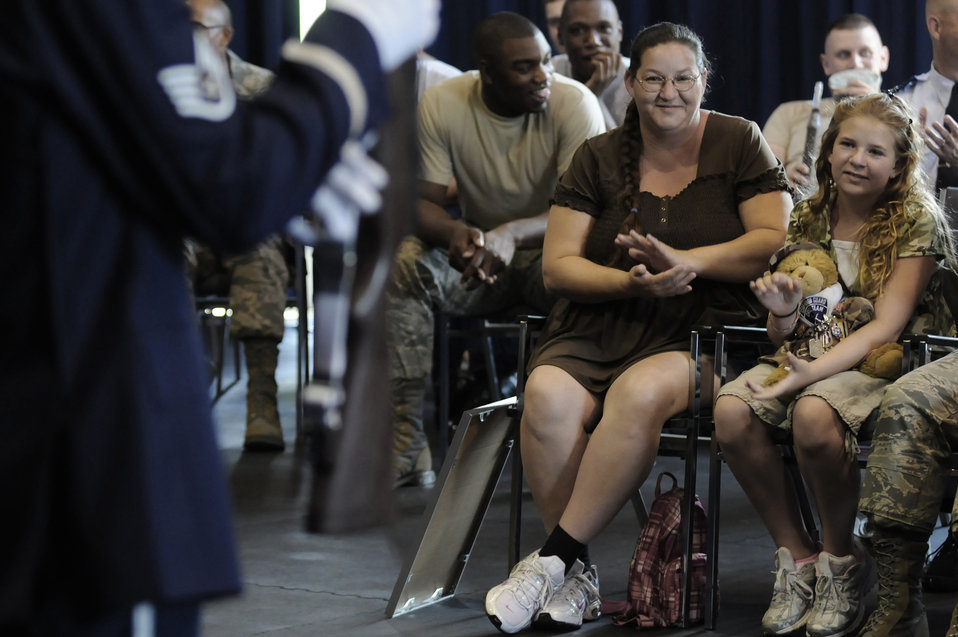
Bolling officials welcome Hero Hugs founder with open arms

Bailey Reese, founder and president of the nonprofit organization Hero Hugs, and her mother, Diana, applaud during Air Force Honor Guard drill team evaluations July 7 at Bolling Air Force Base, D.C. Bailey received numerous awards for her work to include being honored for her contribution to U.S. military morale by President George W. Bush.